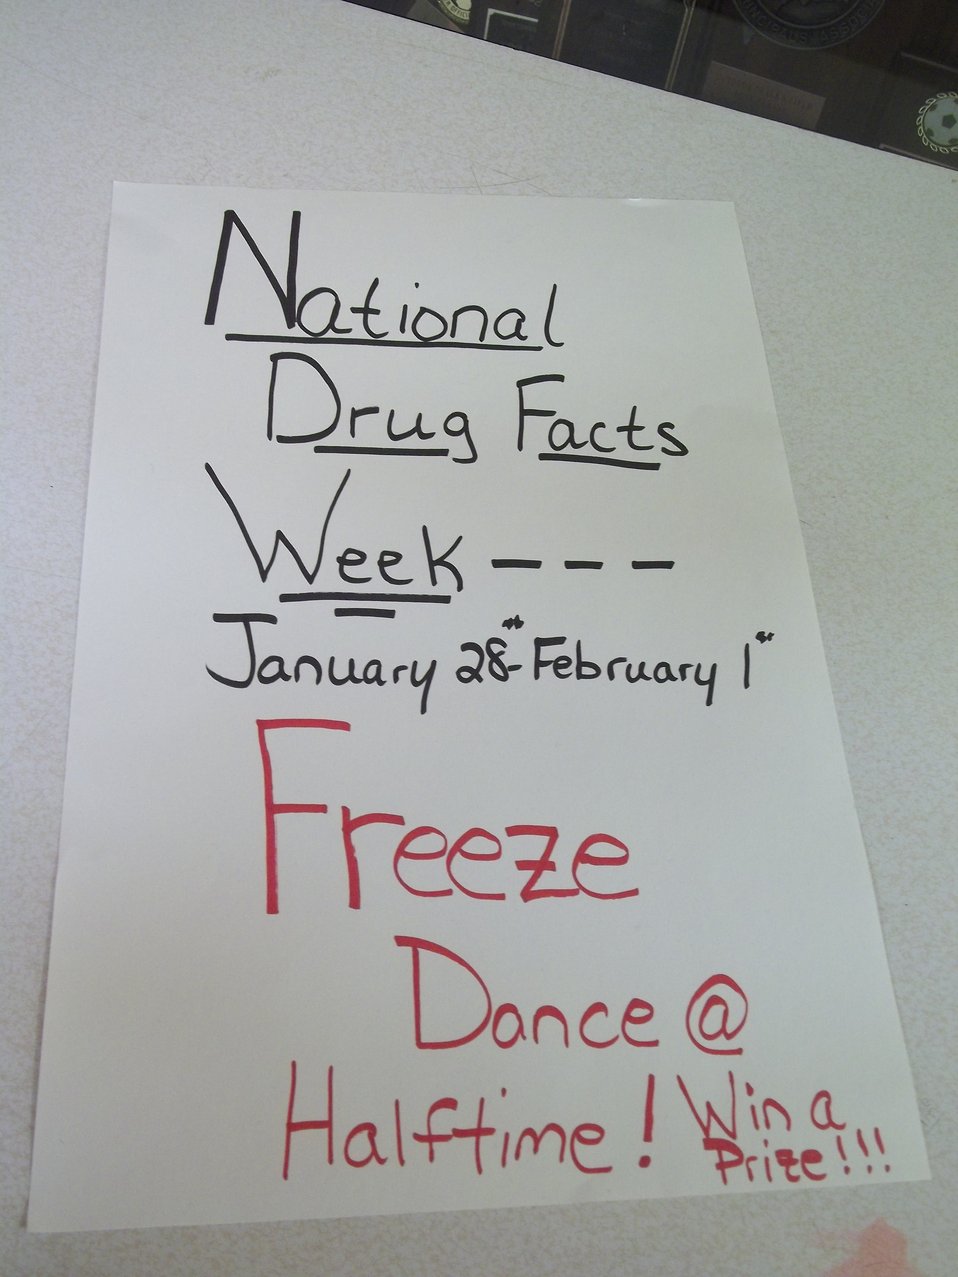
NDFW 2013 Halftime Show

Lisbon, Me. Students from Lisbon High School SADD group held NDFW Event during halftime show, displaying posters, 'Shatter the Myths' books and stickers.